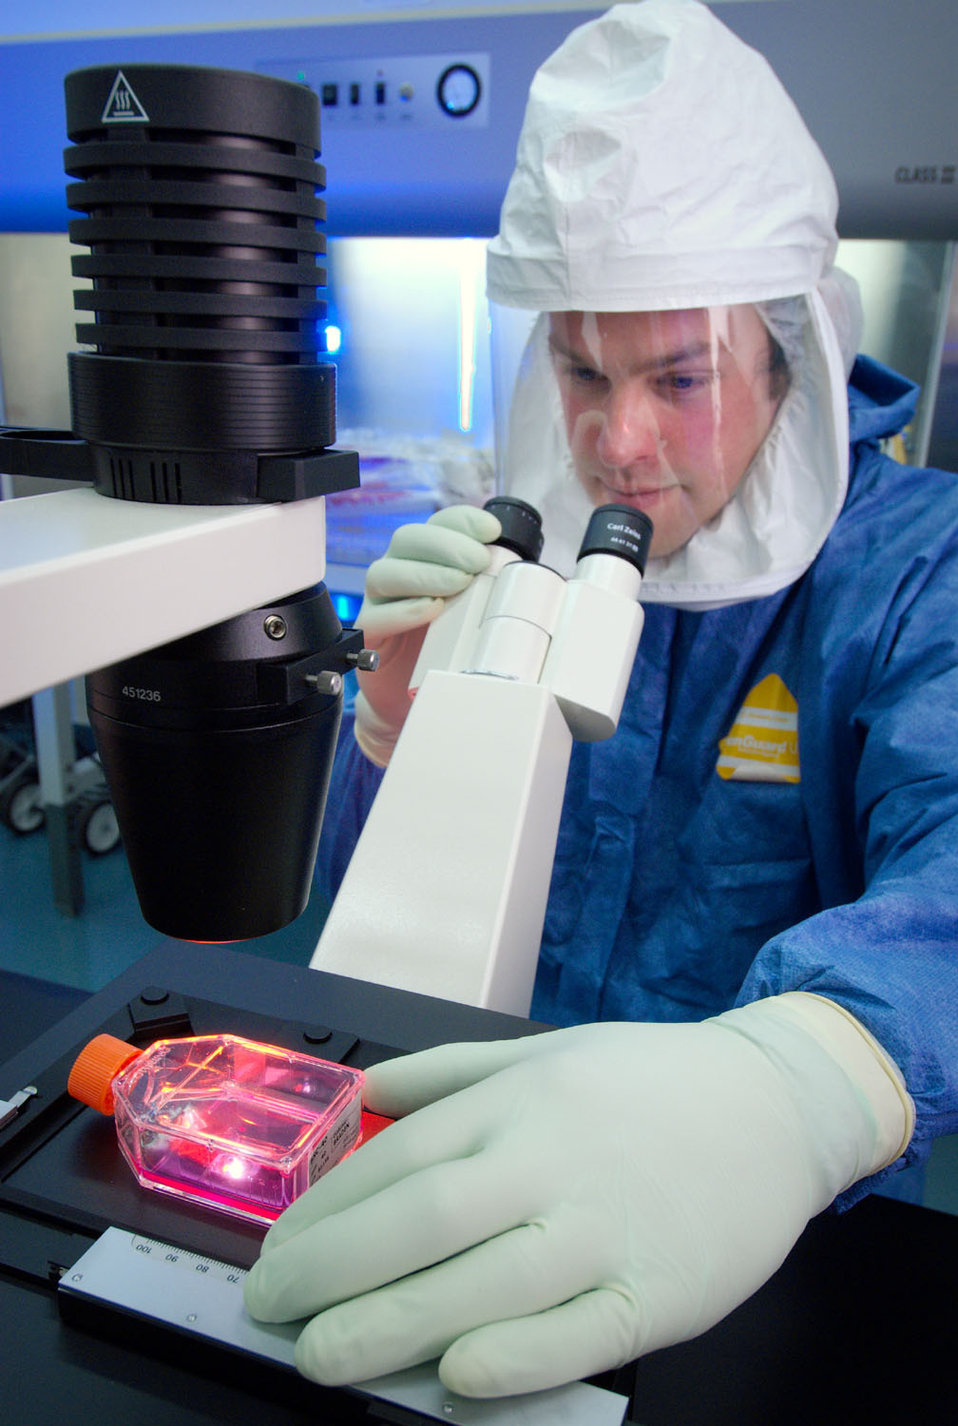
This 2008 photograph depicted a Centers for Disease Control (CDC) scientist as he was examining a culture flask containing Madin-Darby Canine Kidney epithelial cells (MDCK), and looking for any signs of growth in a stock of influenza virus. Combining animal cell cultures and recombinant DNA (rDNA) technology, has become a common laboratory practice in the creation of viral vaccines, as well as other biomanufactured products, including hormones, enzymes, and anticancer agents.Types of Influenza Viruses